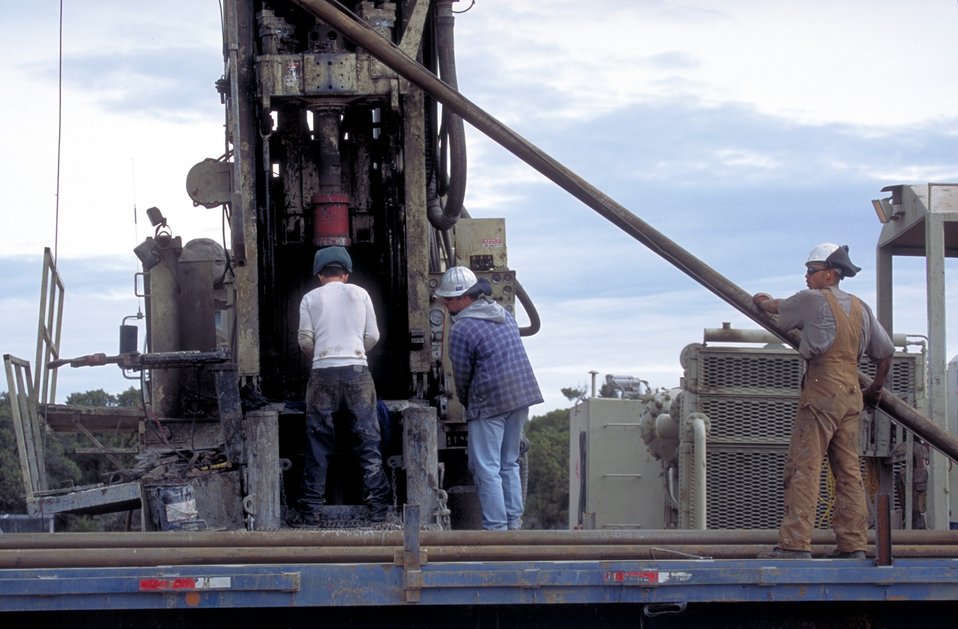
Drilling for coal bed methane near Price, Utah.